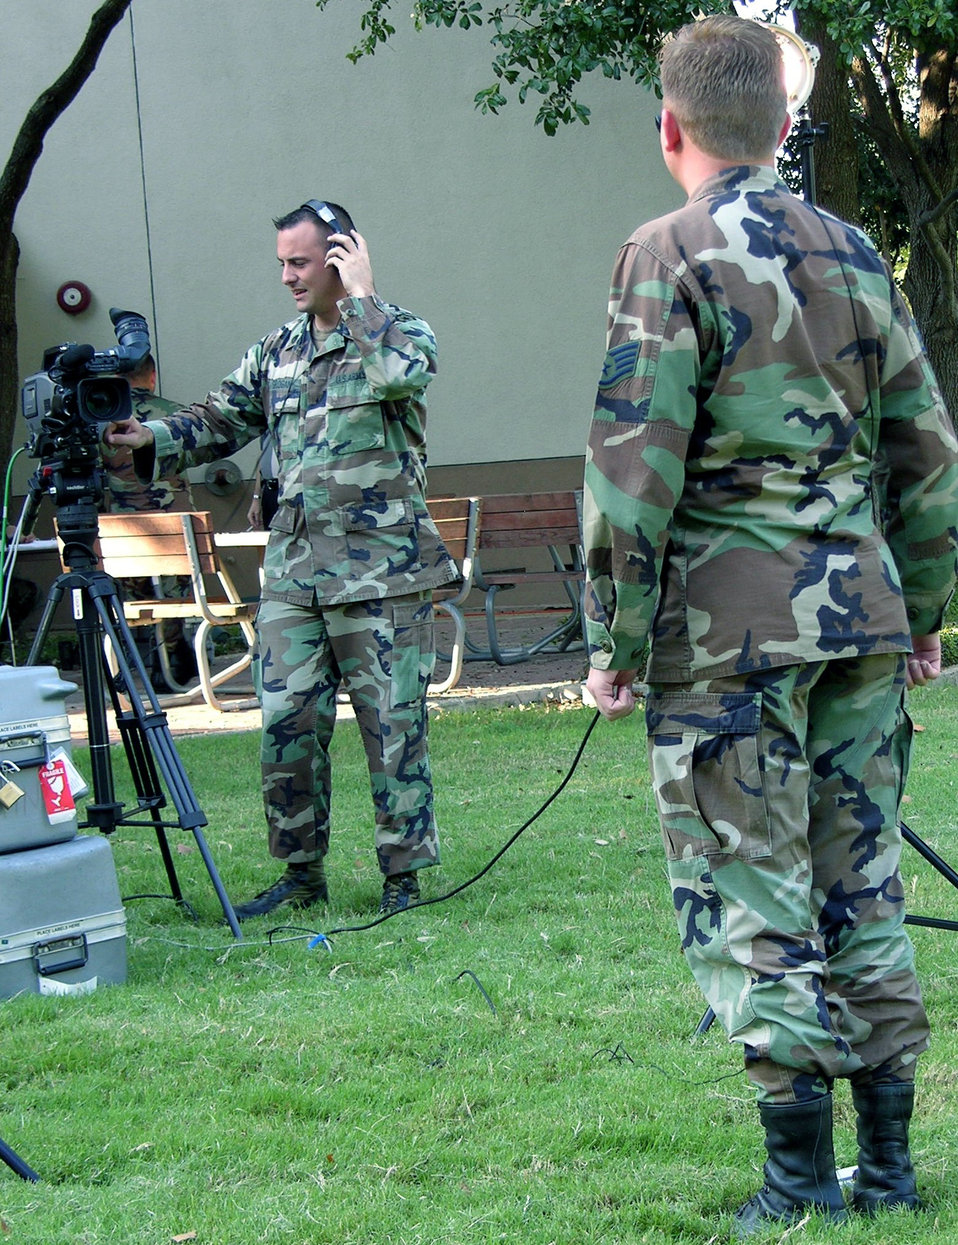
Holiday greetings teams head for overseas bases

SAN ANTONIO -- Army Staff Sgt. Kristoffer Grogan tapes a mock holiday greeting during a training session here. Four teams from Army and Air Force Hometown News Service will soon travel to about 70 overseas installations in 40 days to tape Airmen, Soldiers, Sailors, Marines and Department of Defense civilians who want to send holiday messages home. Sergeant Grogan is a broadcaster with the hometown news service.